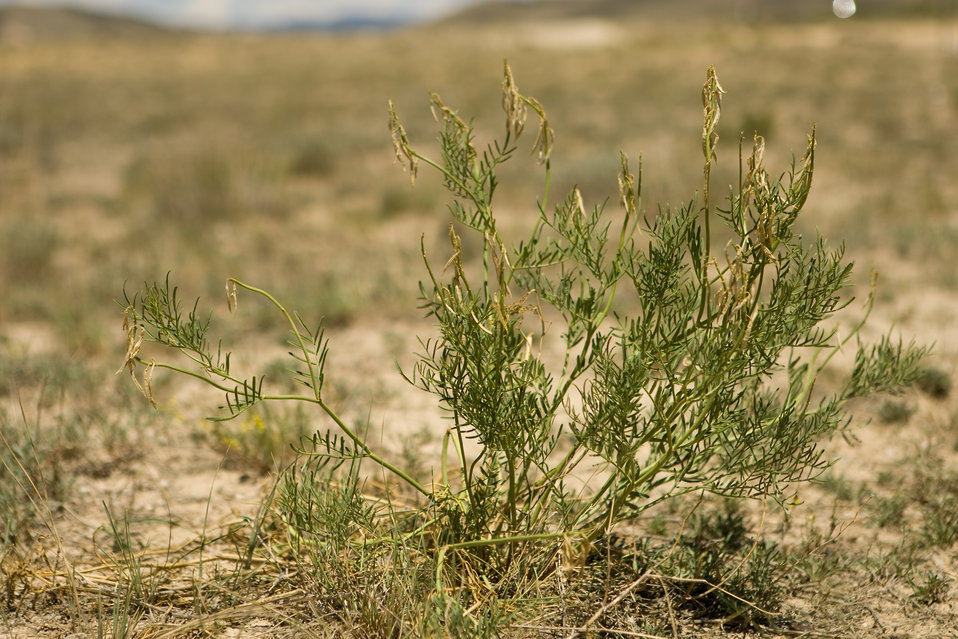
Colorado Rare Plant Conservation Initiative

The Colorado Rare Plant Conservation Initiative (RPCI) is a partnership of 23 statewide and regional agencies, private organizations, and academic institutions working to conserve 121 rare plants in Colorado. As part of these efforts the group developed the Colorado Rare Plant Conservation Strategy, developed Best Management Practices to reduce energy development impacts, addressed climate change, and developed focused strategies for the conservation of individual species at eight priority landscapes. The group has also worked to coordinate volunteer efforts for plant conservation across the state.